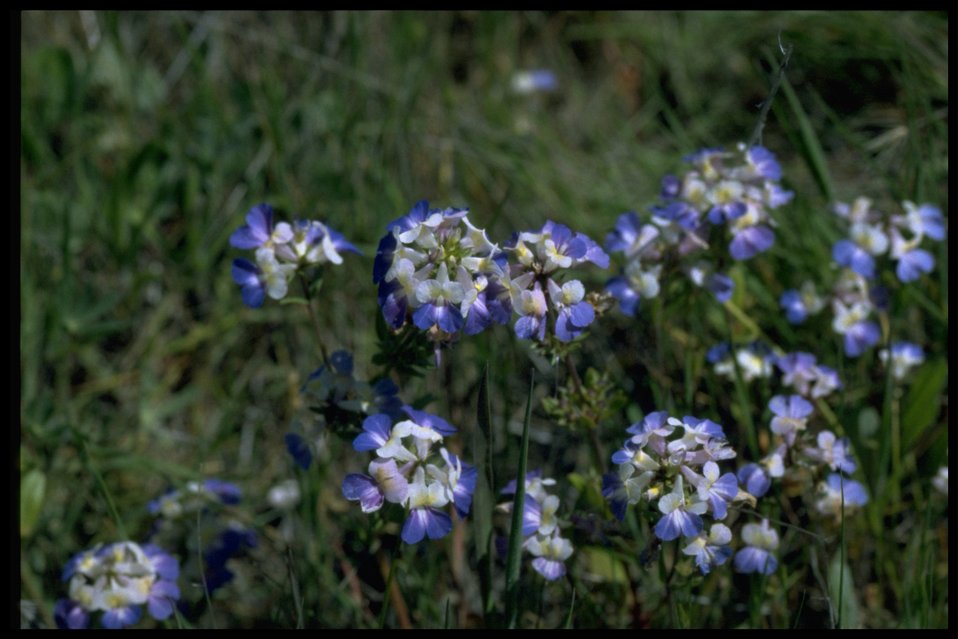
Medium shot of Collinsia grandiflora.